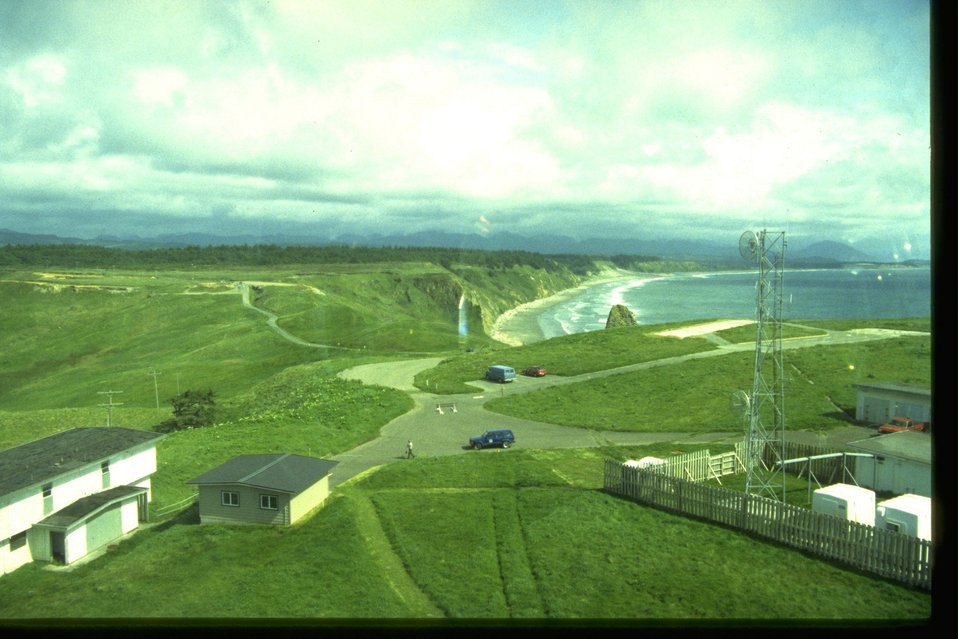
East from lighthouse at Cape Blanco.